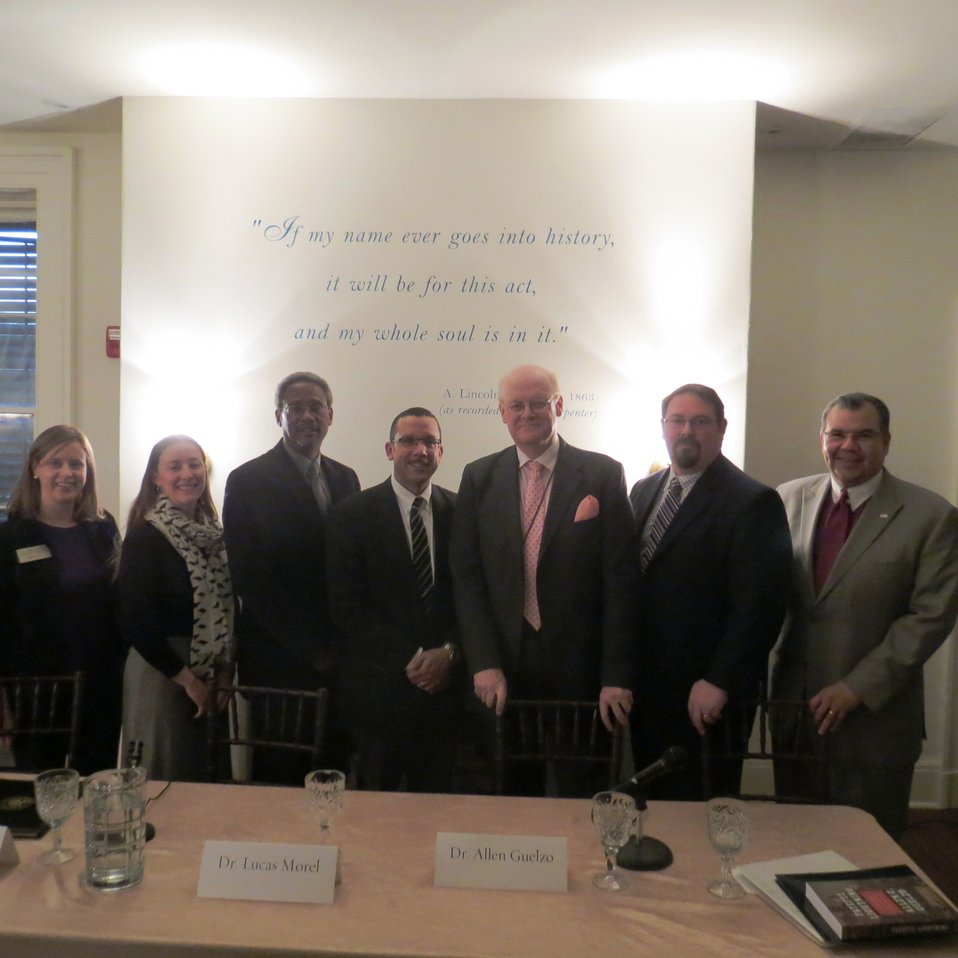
Ambassador Cdebaca Marks the 150th Anniversary of the Emancipation Proclamation

Callie Hawkins; Erin Carlson, Mast, Director of President Lincoln’s Cottage; Professor Spencer Crew; Dr. Lucas Morel; Dr. Allen Guelzo; Ambassador Luis CdeBaca, Director of the State Department’s Office to Monitor and Combat Trafficking in Persons; and Martin Castro, Chair of U.S. Commission on Civil Rights; pose for a photograph at President Abraham Lincoln’s Cottage in Washington, D.C., January 3,2013. January 1, 2013, marked the 150th Anniversary of the Emancipation Proclamation.